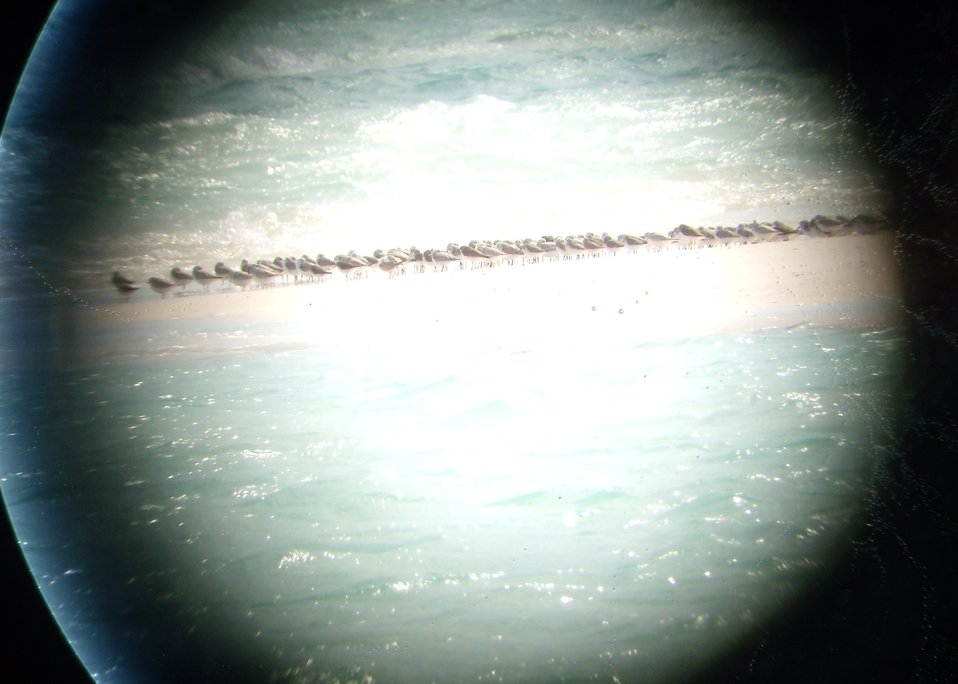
Mixed shorebird flock, containing one of the largest numbers of piping plovers counted in one place during the entire Bahamas survey. Taken through spotting scope (“digiscoped”) on Berry Islands.